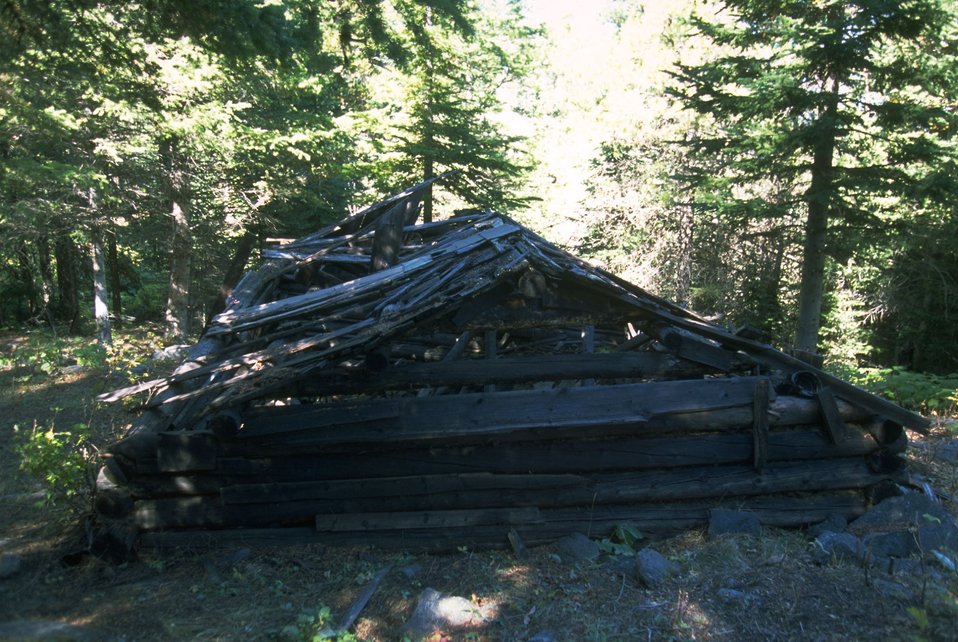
Old cabin in Coloma